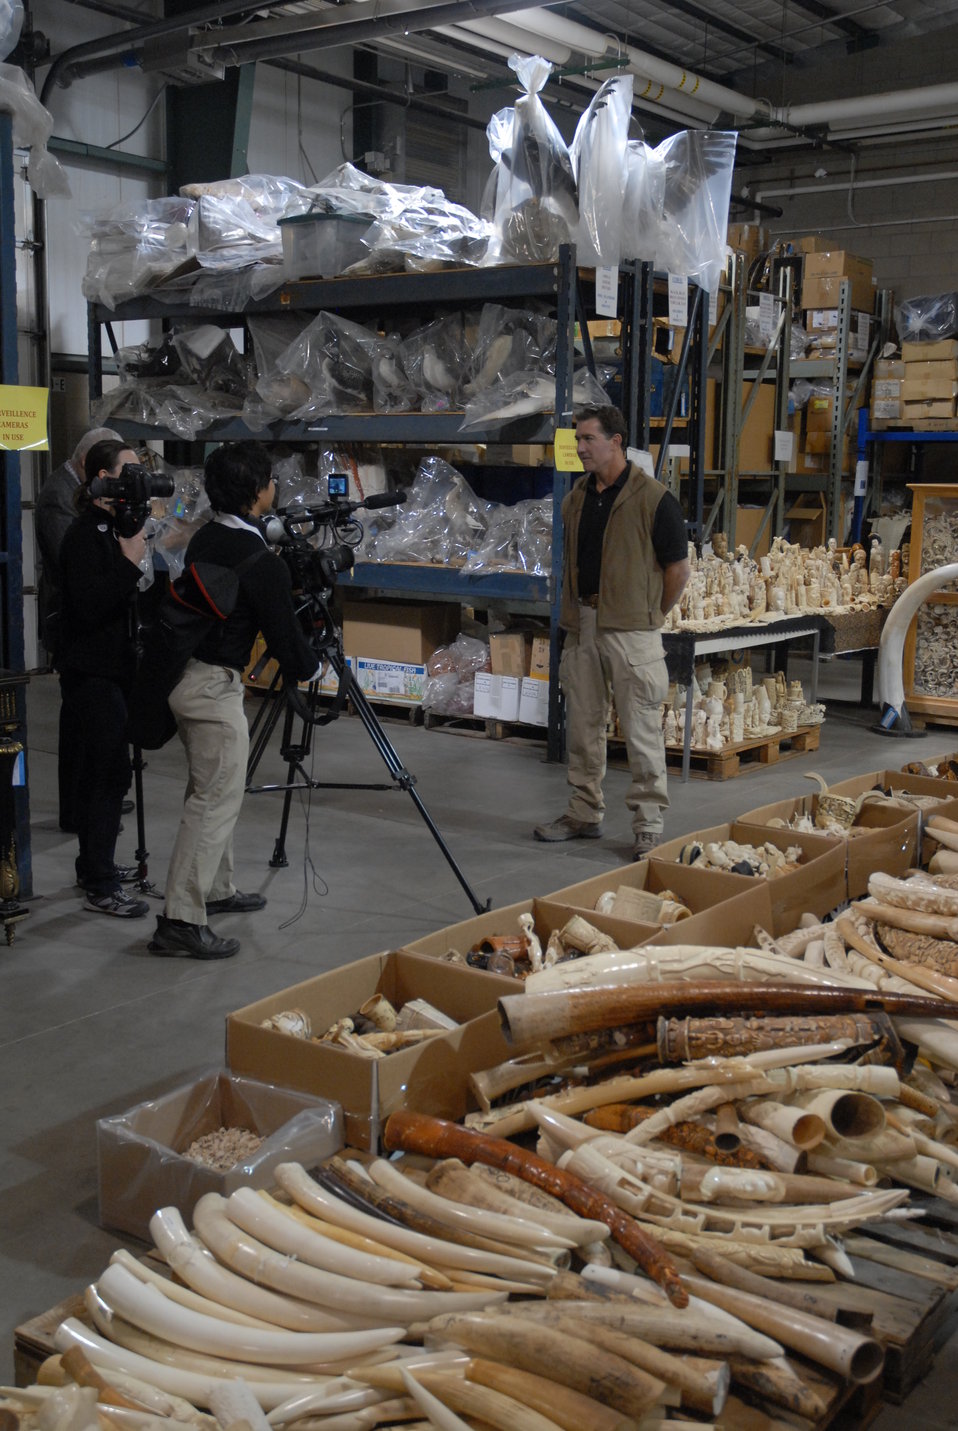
Ivory stockpile slated for destruction in the crush.